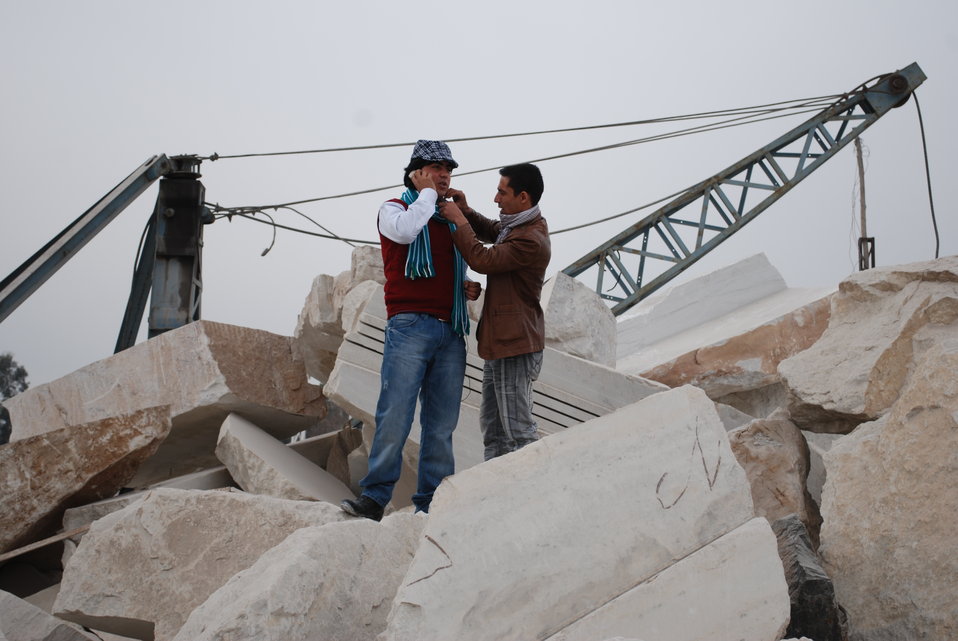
'On the Road' in Nangarhar Province